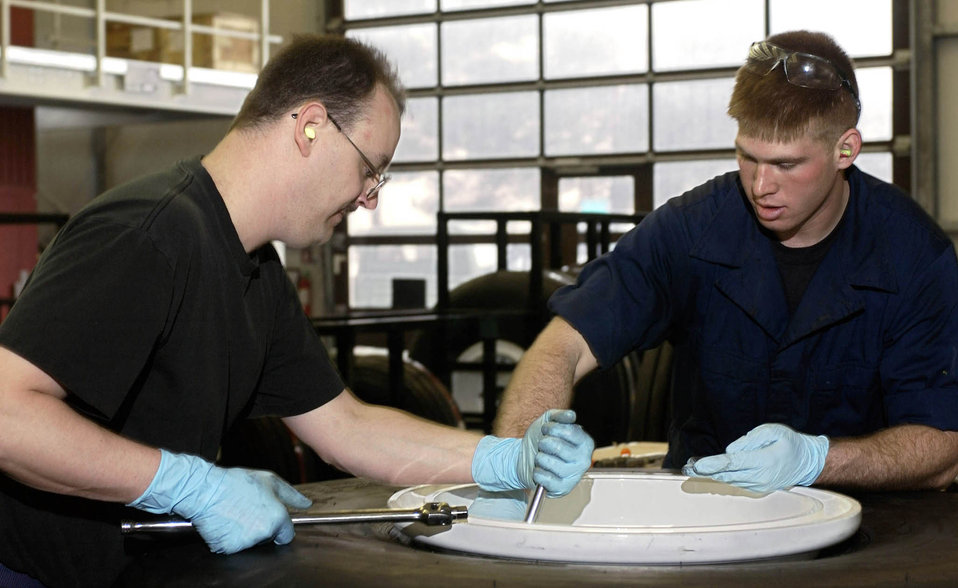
Feeling tired?

RAMSTEIN AIR BASE, Germany -- Staff Sgt. Bruce Hegner (left) attaches an air valve as Airman 1st Class Vincent Citrullo prepares to tighten the wheel halves together while assembling a C-130 Hercules wheel at the 86th Maintenance Squadron's wheel and tire centralized intermediate repair facility here. Sergeant Hegner is the facility's noncommissioned officer in charge. Airman Citrullo is serving a temporary duty here and is from the 355th Aircraft Maintenance Squadron at Davis-Monthan Air Force Base, Ariz.